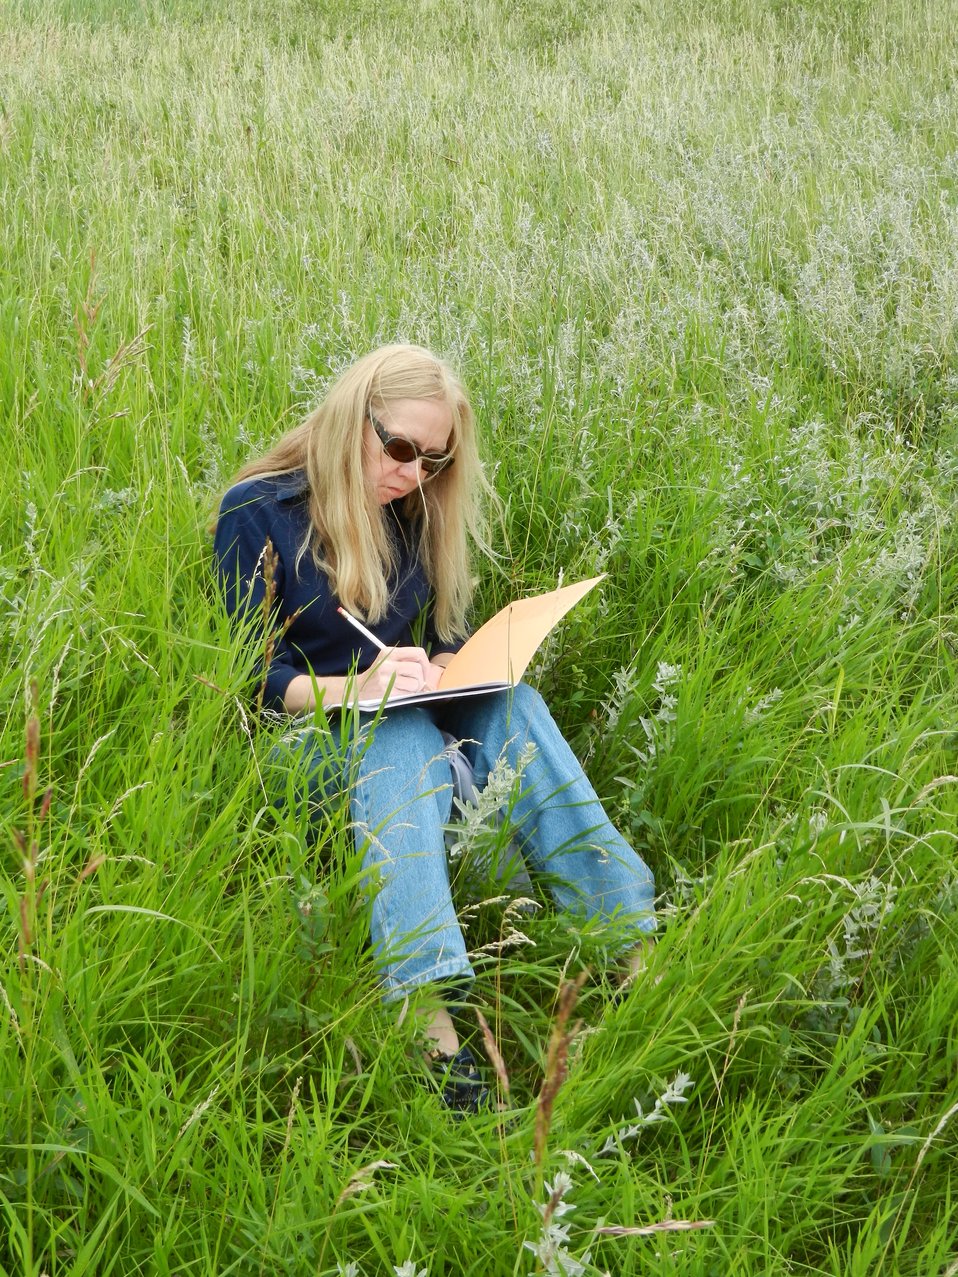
Writing in Nature Journal

Anyone can start a Nature Journal - it's easy and fun! Visitor takes time to write in a Nature Journal while on a hike at Des Lacs National Wildlife Refuge in North Dakota.